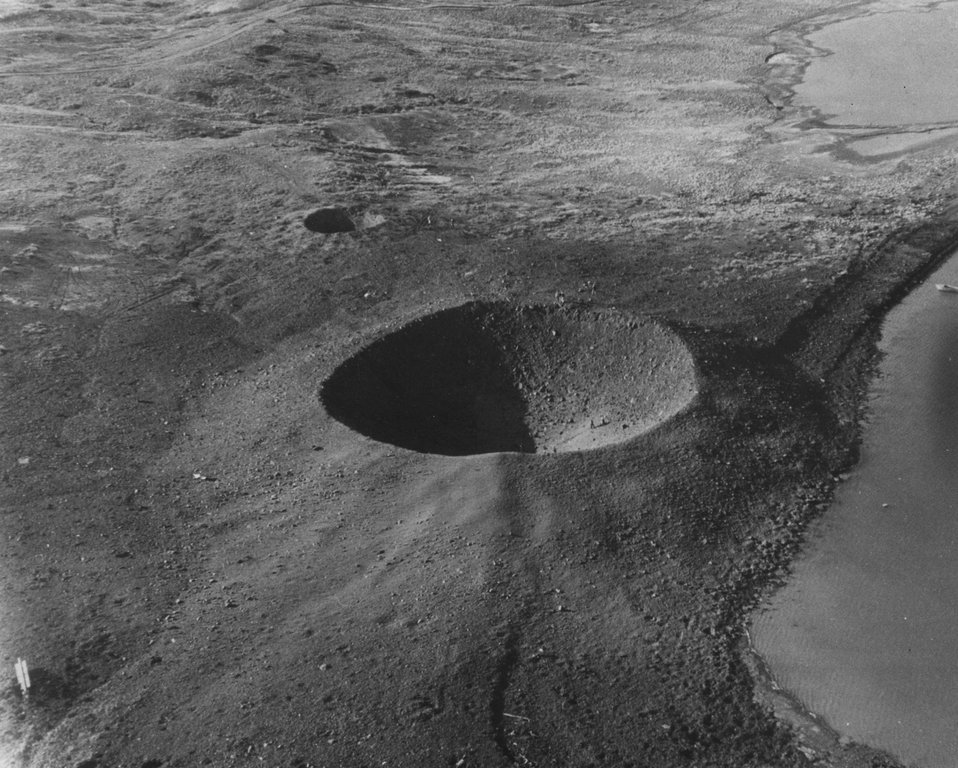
The AEC and the U.S. Army Corps of Engineers are jointly developing experience and information on the cratering and seizmic effects of explosives as a prelude to the possible use of nuclear explosives for civil engineering purposes. c. 1967